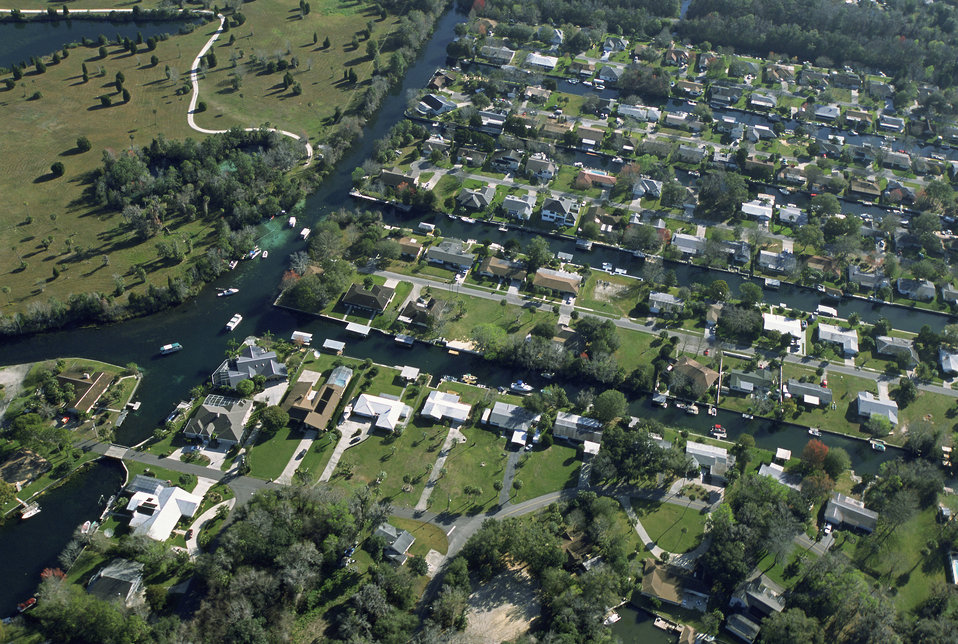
Urban Sprawl